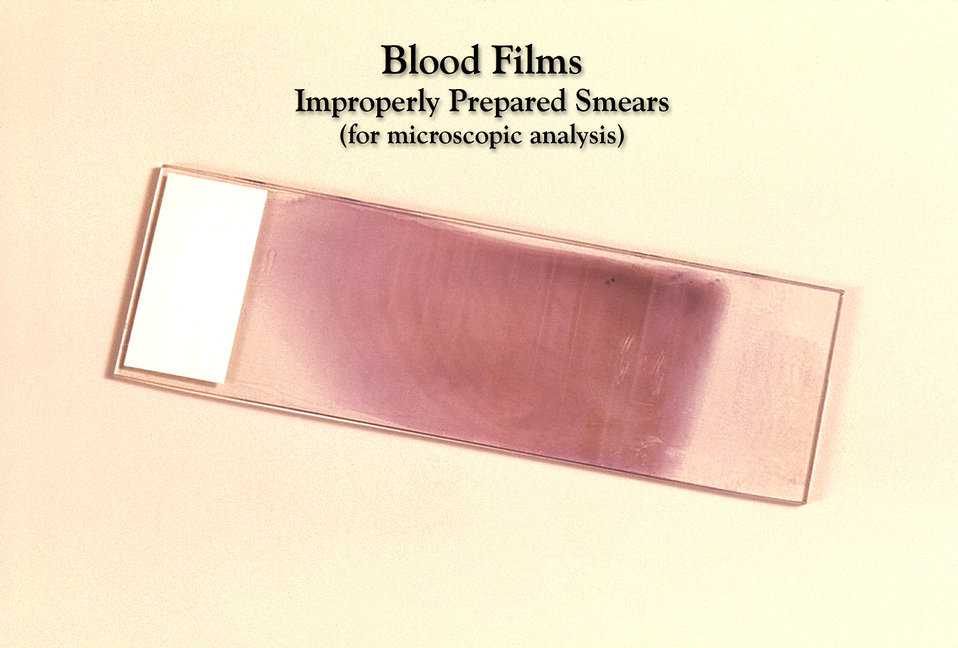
Poor film preparation technique yielded an unfavorable result in this Giemsa stained slide specimen.